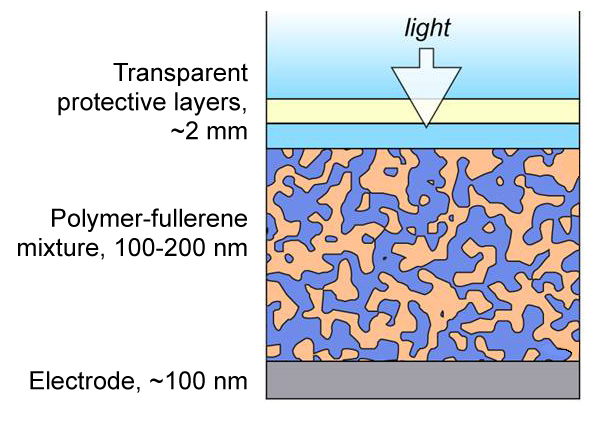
Organic Solar Power

In this cross-section of an organic photovoltaic cell, light passes through the upper layers (from top down, glass, indium tin dioxide, and thermoplastic) and generates a photocurrent in the polymer-fullerene layer. Channels formed by polymers (tan) and fullerenes (dark blue) allow electric current to flow into the electrode at bottom. NIST research has revealed new information about how the channels form, potentially improving cell performance.